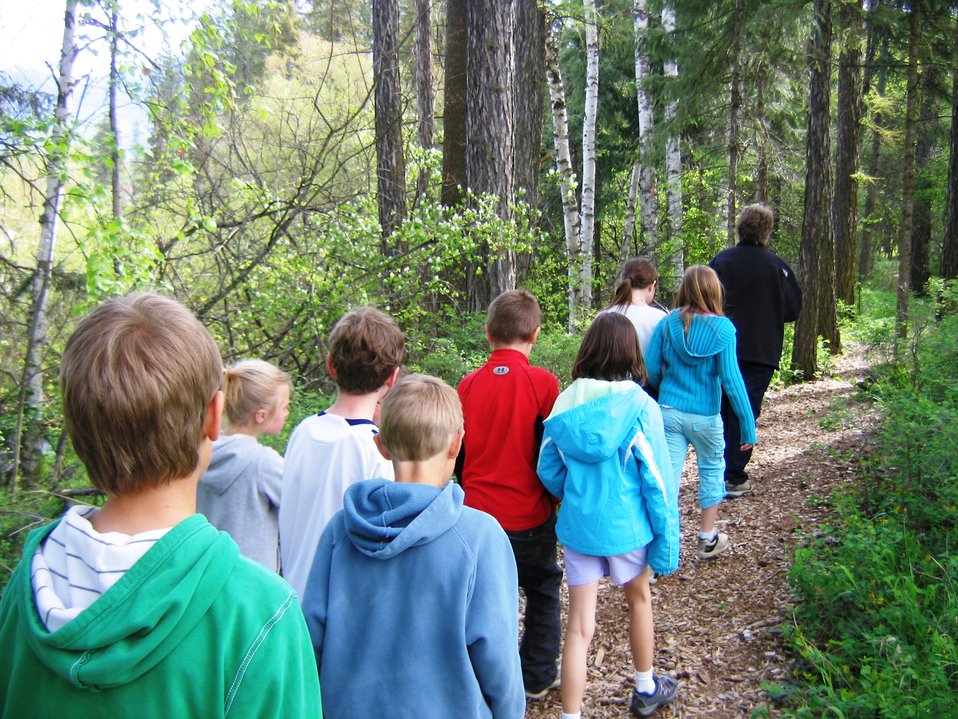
Creston National Fish Hatchery

A local school group comes out to Creston NFH to learn the importance of hatcheries and to enjoy a nature hike. Fish hatcheries are a great place to take your school groups or family to learn all about fish breeding and to take an educational nature hike.